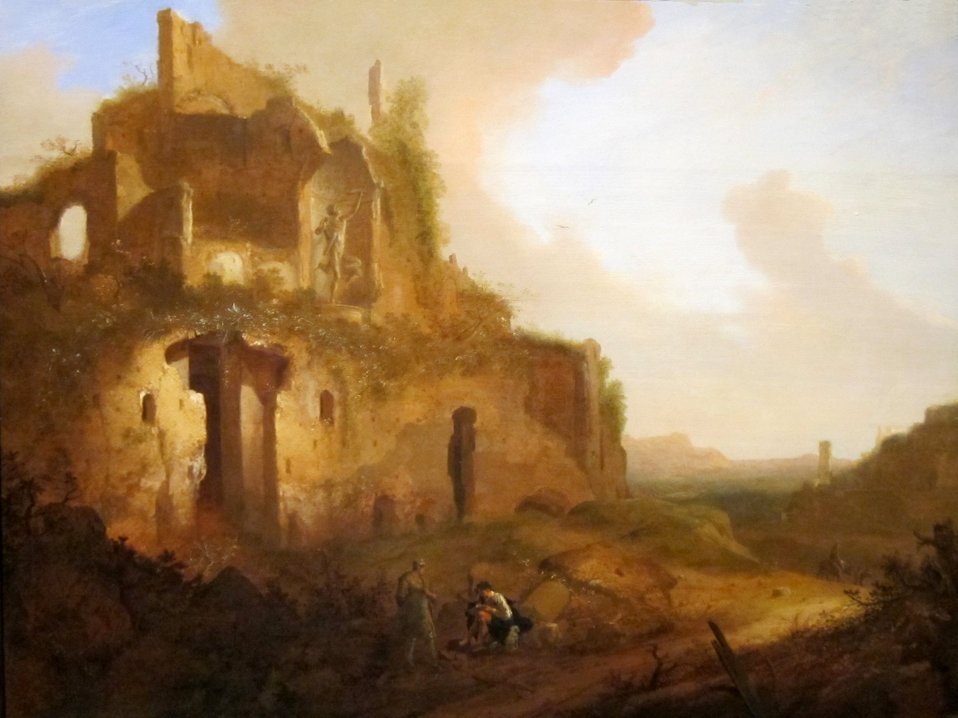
An Italianate Landscape with Ruins and an Artist Sketching, oil on canvas painting by Bartholomeus Breenbergh, c. 1643, Dayton Art Institute